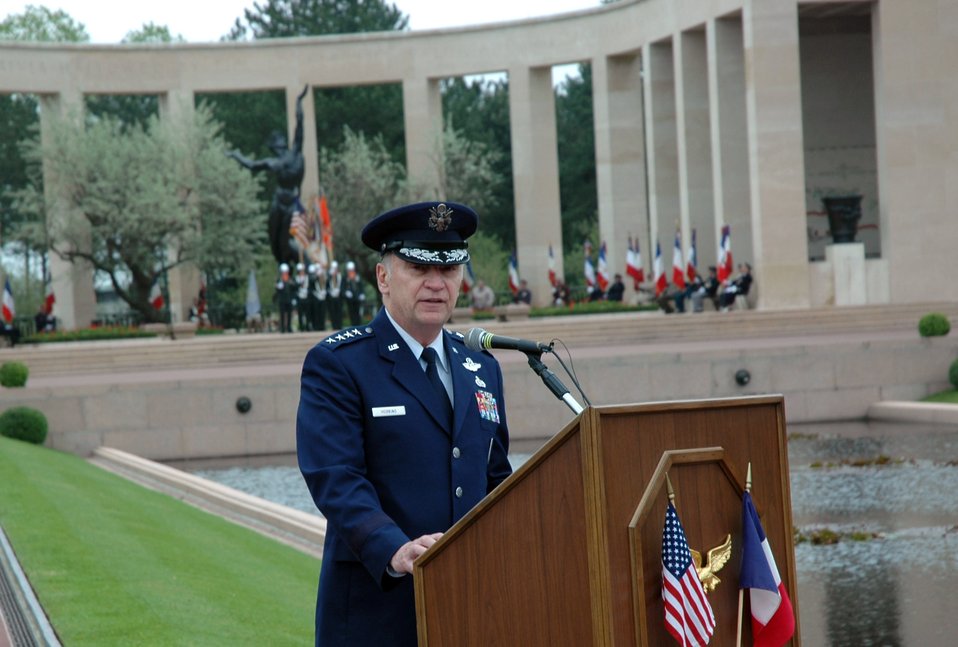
General Hobbins delivers Normandy Memorial Day address

Gen. Tom Hobbins, U.S. Air Forces in Europe commander, delivers a Memorial Day address at Normandy American Cemetery in Colleville-sur-Mer, France, on Sunday, May 28, 2006.